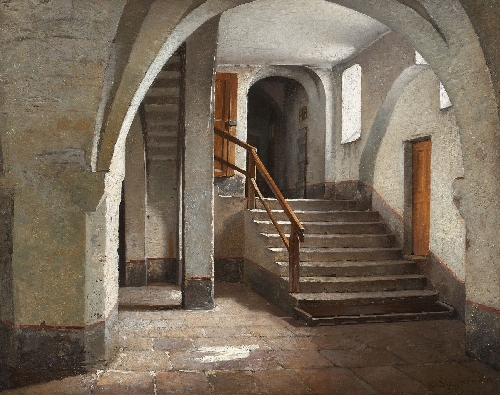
Innenansicht des Klosters St. Afra zu Meißen, signiert unten rechts: A. Stegmann, Öl auf Leinwand, auf Karton aufgezogen. 49 x 62 cm.